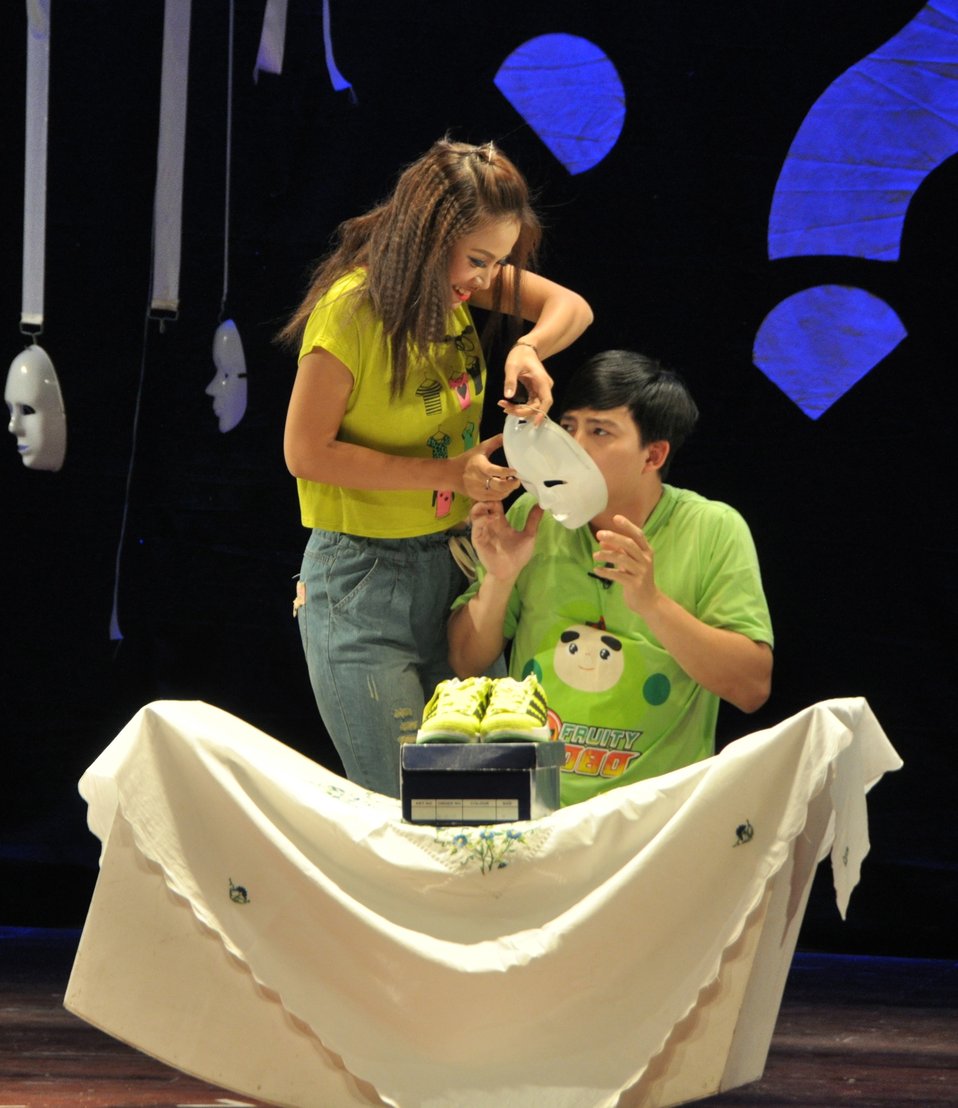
PEPFAR Musical Questions and Exclamations

Hanoi, May 17, 2013